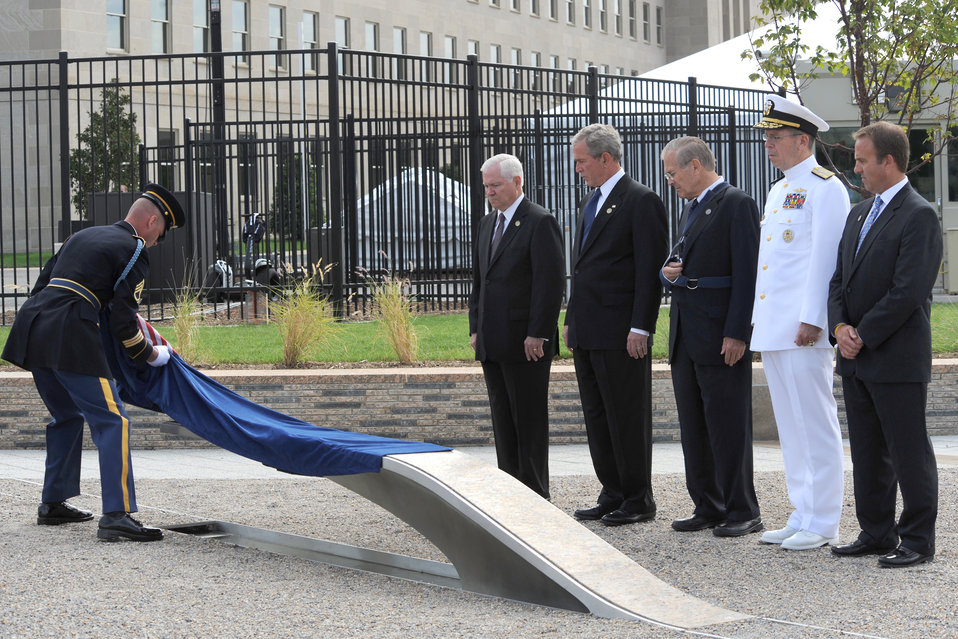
Pentagon Memorial opens to public

The official party watches as the first inscribed memorial unit is unveiled at the Pentagon Memorial Sept. 11 in Alexandria, Va. The national memorial is the first to be dedicated to those killed at the Pentagon on Sept. 11, 2001. The site contains 184 inscribed memorial units honoring the 59 people aboard American Airlines Flight 77 and the 125 in the building who lost their lives that day.